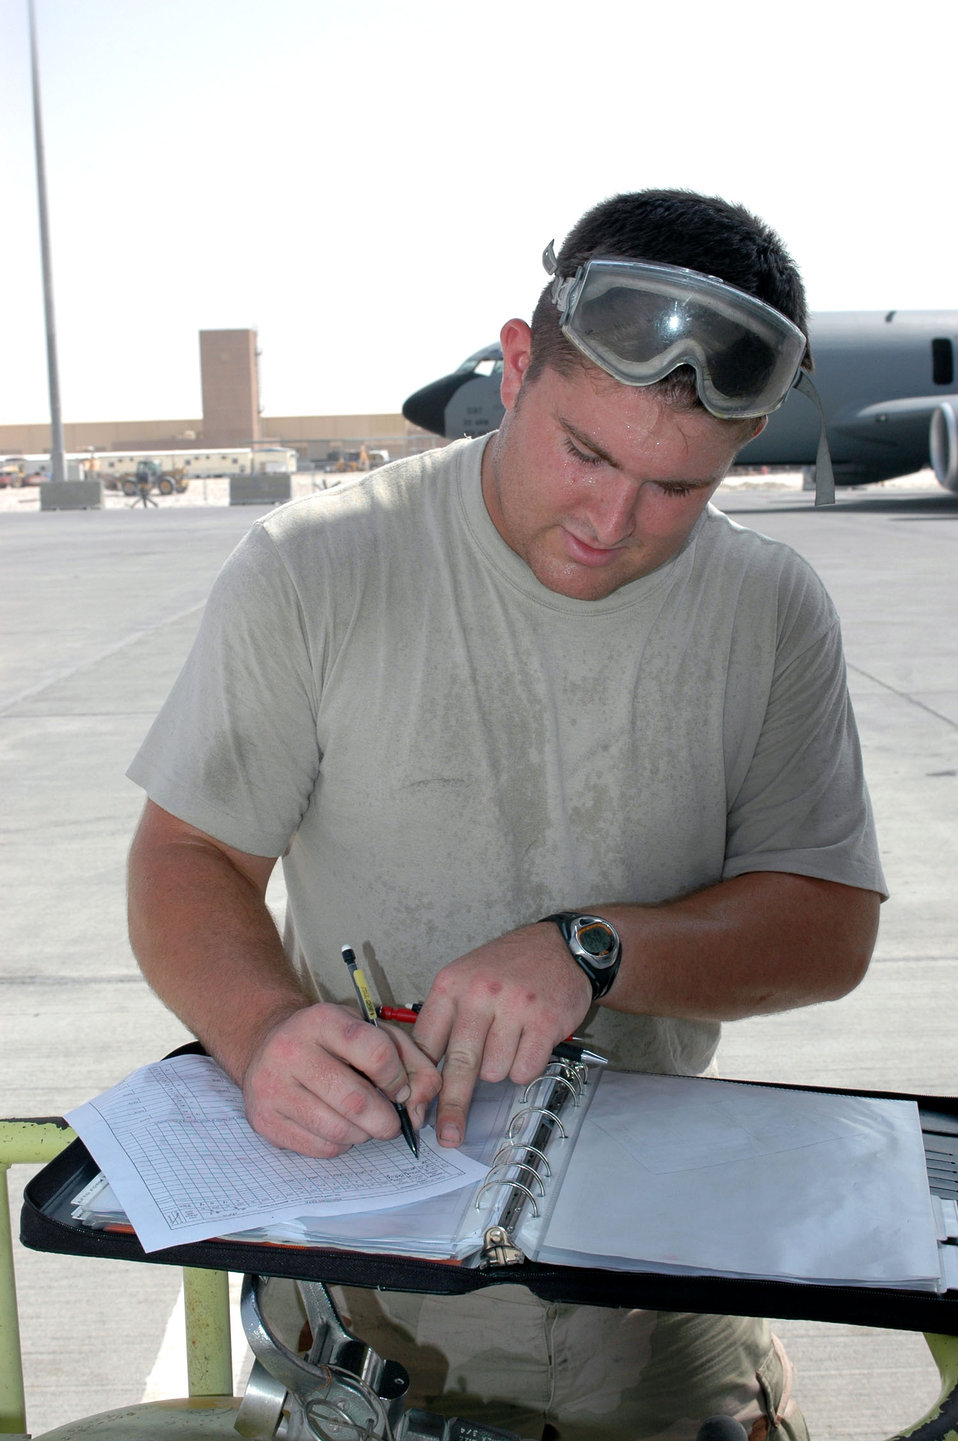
Deployed unit turns fuel into freedom

Senior Airman Neal Sicard fills out aircraft forms for a KC-135 Stratotanker in Southwest Asia. The forms provide a record of all maintenance actions performed on the aircraft. Airman Sicard is deployed to the 340th Aircraft Maintenance Unit from Grand Forks Air Force Base, N.D.